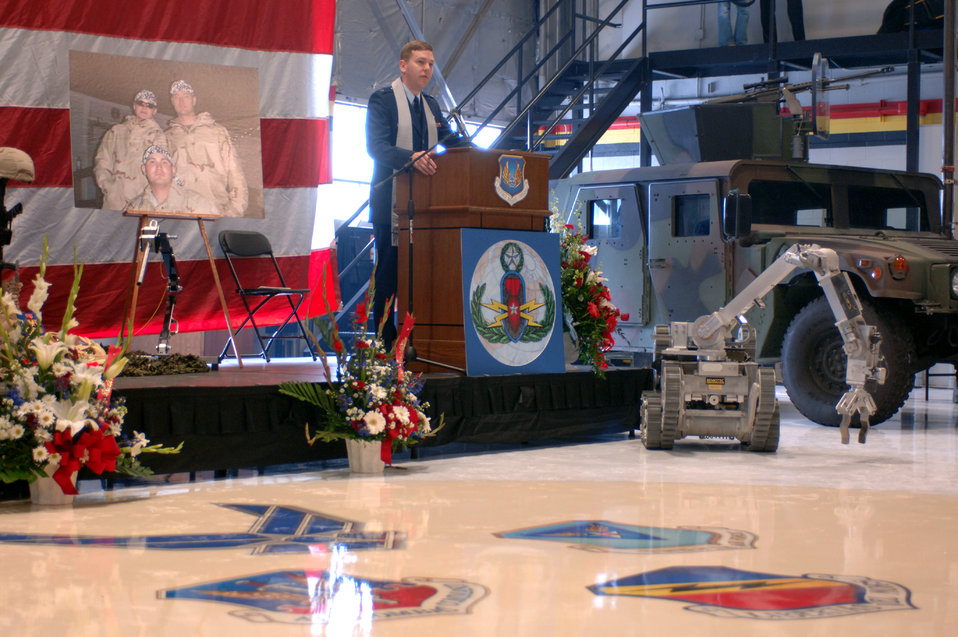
Memorial Service

Chaplain (Capt.) Alex F. Jack pays tribute Jan. 12 during a memorial service honoring fallen comrades killed in action in Iraq Jan. 7 as a result of a car bomb. The three Airmen killed were Tech. Sgt. Timothy R. Weiner, Senior Airman Elizabeth A. Loncki and Senior Airman Daniel B. Miller, Jr., all assigned to the 775th Civil Engineer Squadron Explosive Ordnance Disposal Flight at Hill Air Force Base, Utah. Several pieces of equipment the EOD flight uses were on display during the memorial service.